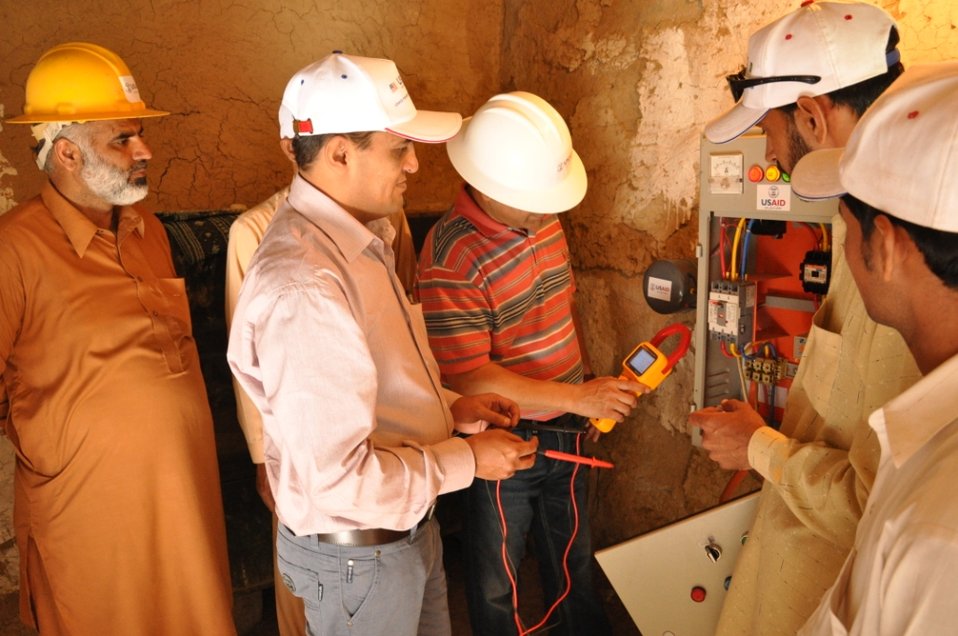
Usaid To Provide Technical Assistance To Improve Efficiency Of Tube-Wells In Iesco By Installing 2600 Lt Capacitors at Islamabad on April 26, 2012